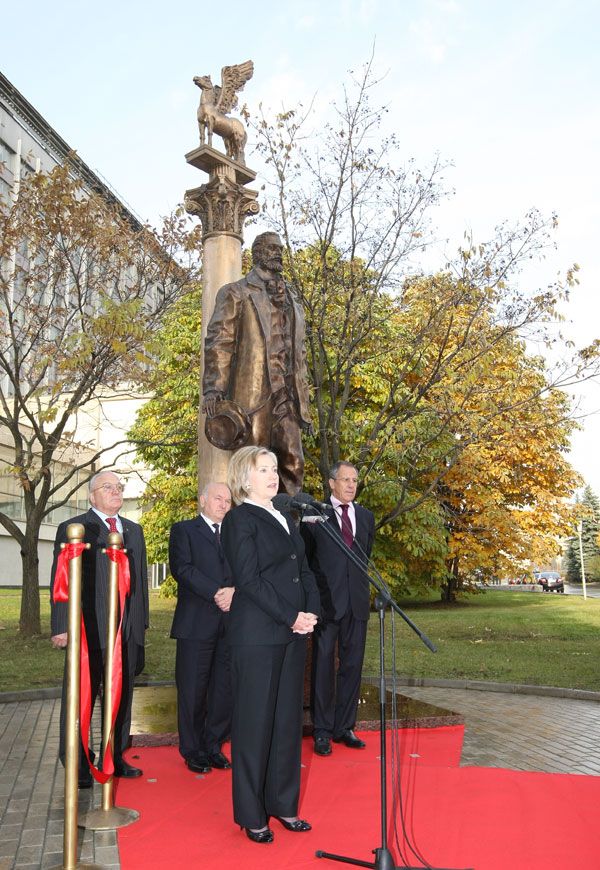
Secretary Clinton Attends Opening of Walter Whitman's Statue

U.S. Secretary of State Hillary Rodham Clinton attends the opening of the statue of American poet Walter Whitman at the campus of the Moscow State University in Moscow, Russia, October 14, 2009.